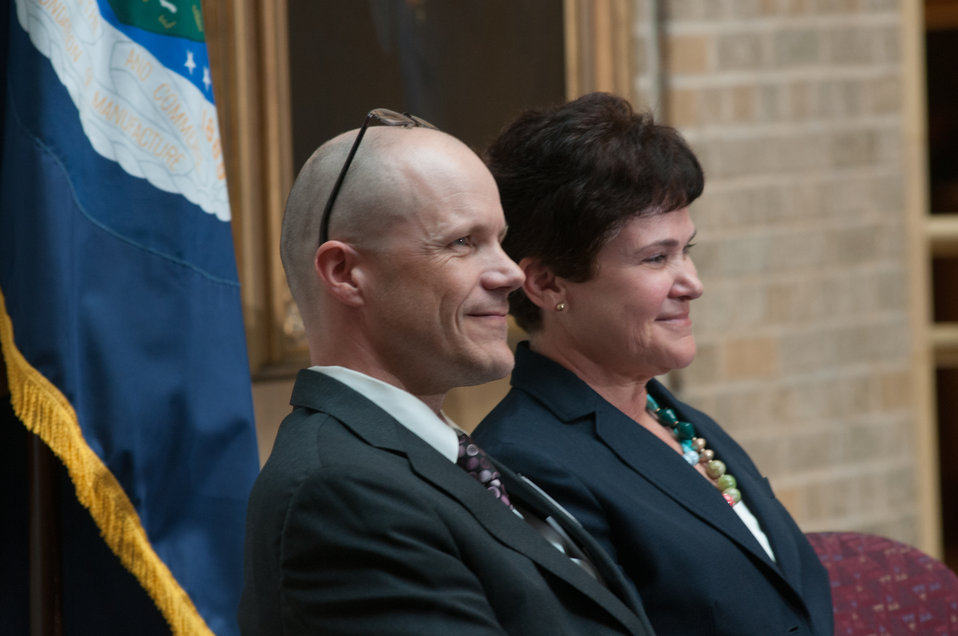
U.S. Department of Agriculture (USDA) Undersecretary for Rural Development Doug O’Brien (left), and U.S. Department of Agriculture (USDA) Deputy Secretary Krysta Harden hosts the signing of the USDA Bioenergy Memorandum of Understanding and was joined by leaders from, Biomass Power Association, President and CEO Bob Cleaves; Pellet Fuels Institute Executive, Director Jennifer Hedrick; Biomass Thermal Energy Council, Executive Director Joseph Seymour; and Alliance for Green Heat, President John Ackerly, for the announcement of the new partnership agreement, at the USDA Headquarters, in Washington, D.C., on Wednesday, September 11, 2013. Moderating the event is Under Secretary for Rural Development Doug O’Brien.
The partnership agreement focuses on promoting wood energy nationwide as a means to address fire risks, bolster rural economic development, improve air quality, and help meet the Obama Administration’s renewable energy and energy efficiency goals. These organizations support the use of wood energy across the scale of users – from residential users, to commercial and intuitional facilities, to industrial production of heat and or electricity to drive businesses and feed the electrical grid.
Under the terms of the five grants announced by Deputy Secretary Harden, private, state and federal organizations will work together to stimulate the development of additional wood energy projects in their states. Collectively, $2.9 million will be spent o this effort -- $1.1 million on federal funds and $1.8 million in non-federal funds. For more information o0n the cooperative agreement program, visit na.fs.fed.us.werc/wood-energy/ USDA Photo by Lance Cheung.